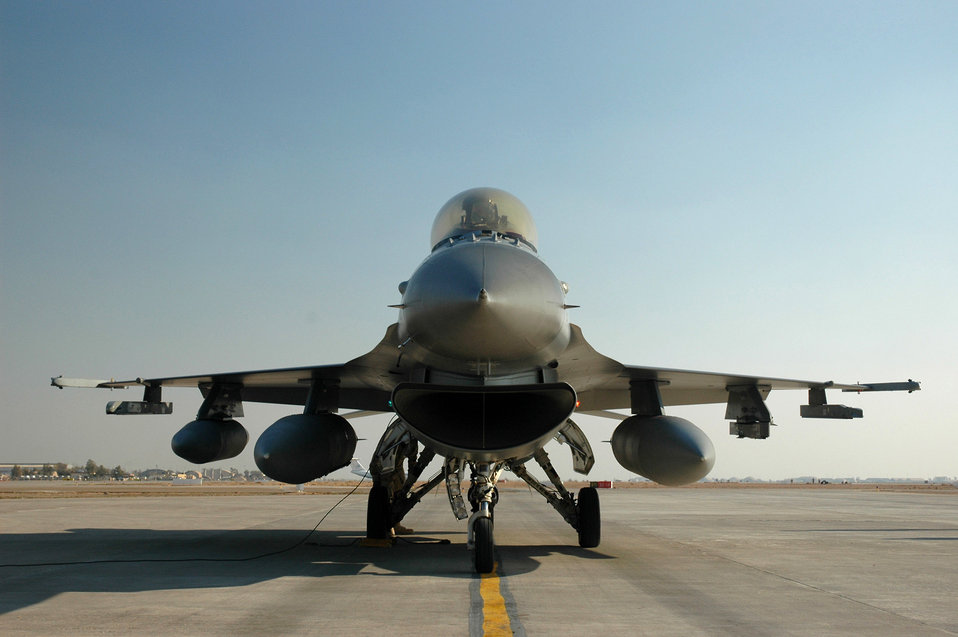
Airpower summary for July 26, 2007

An Air Force F-16 Fighting Falcon sits on the flightline at Balad Air Base, Iraq. F-16s fly close-air-support missions for Operation Iraqi Freedom. There were 49 CAS missions flown by coalition aircraft for OIF July 26.